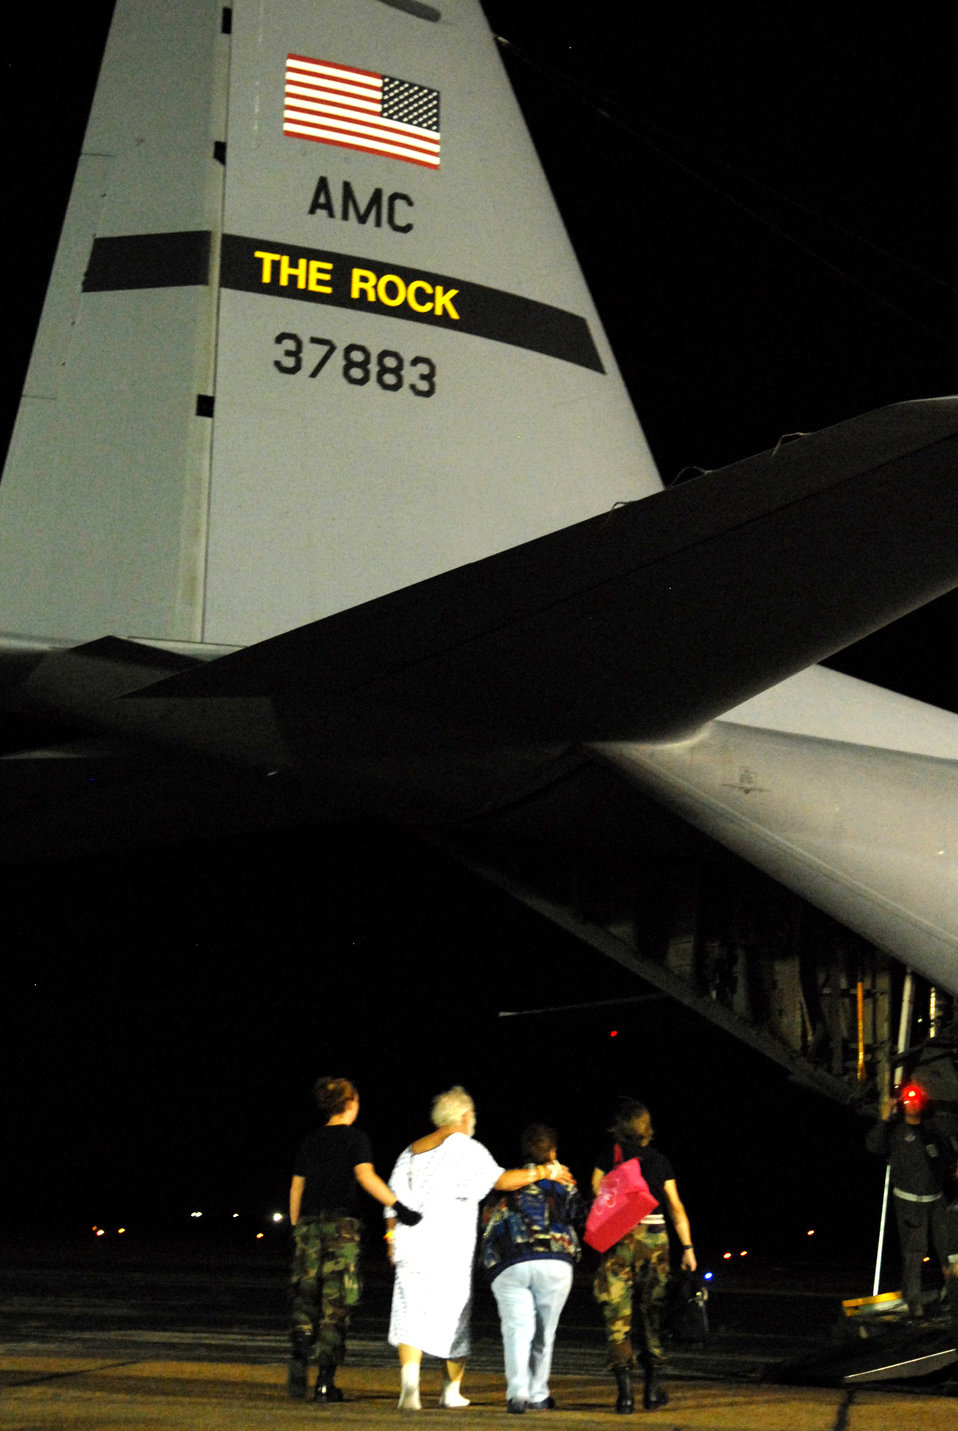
Airman evacuate patients from Beaumont

Airmen load hospital patients onto a C-130 aircraft Sept. 12 at the airport in Beaumont, Texas, for a flight to Lackland Air Force Base in San Antonio. These patients are being transported by aircrews from Little Rock AFB, Ark., and medical Airmen from the 908th Aeromedical Evacuation Squadron at Scott AFB, Ill., in preparation for Hurricane Ike's landfall in southern Texas.